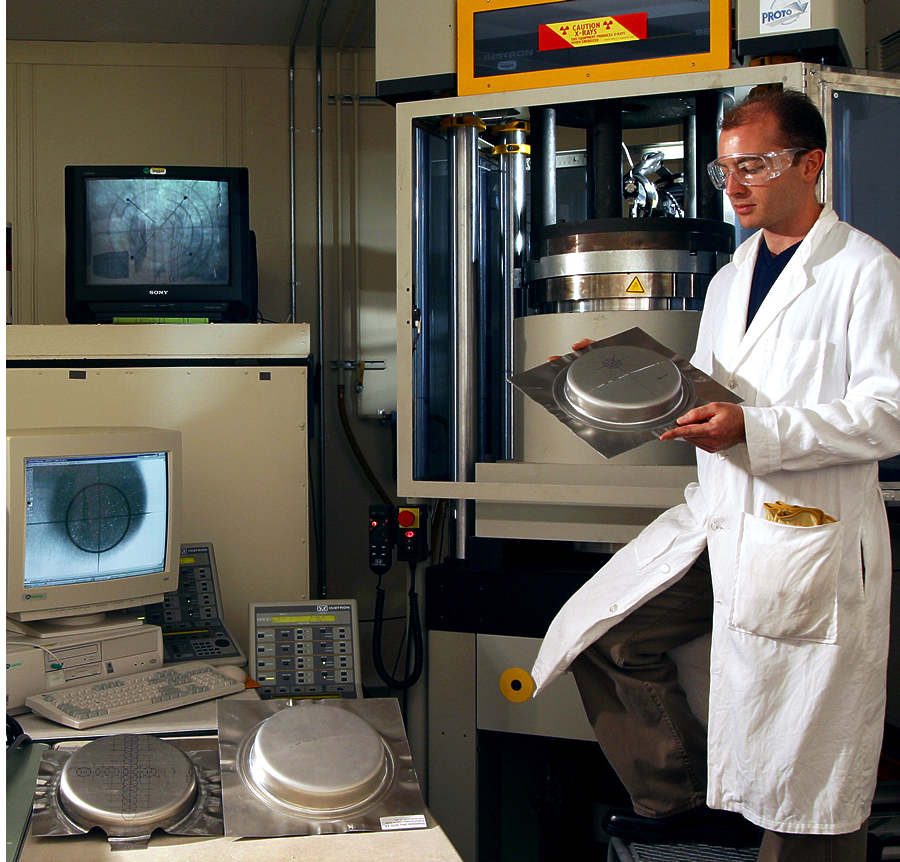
Metal Stamping Project

With new, one-of-a-kind test equipment, National Institute of Standards and Technology (NIST) researchers aim to stamp out costly, delay-causing errors in the design of dies used to make sheet-metal parts ranging from car hoods to airplane wings to pots, pans and cans.